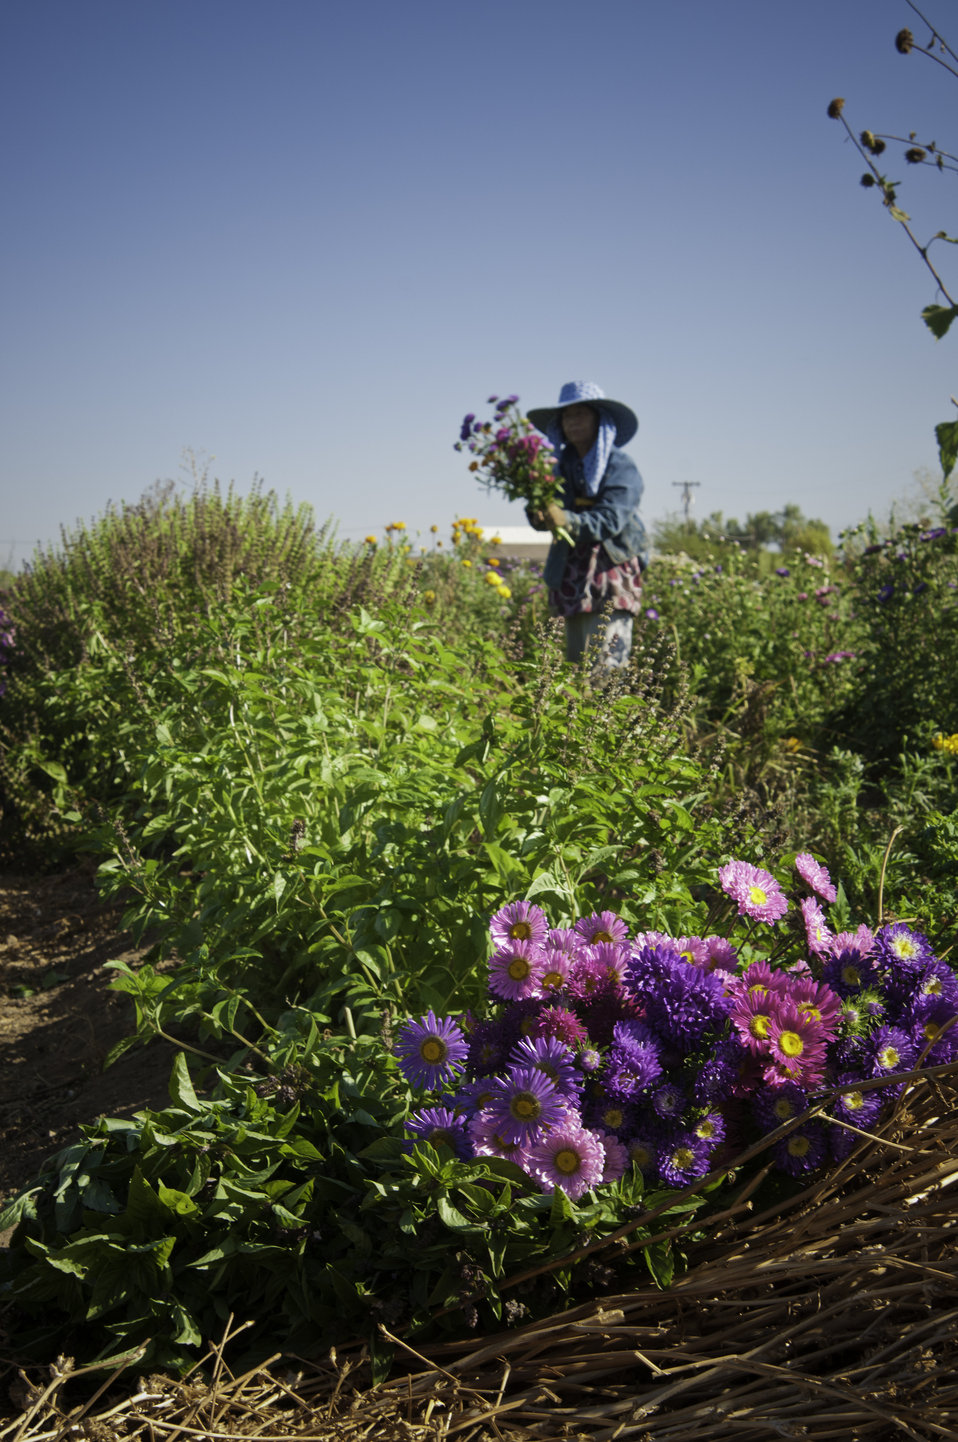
May Young Vu a Hmong farmer harvesting flowers on her farm May's Flower's in Sanger, California May Young Vu a Moung farmer taking opo squash harvested in the morning on her farm May's Flower's in Sanger, California to be packed for the farmers market in the afternoon on Thursday, August 29, 2013.